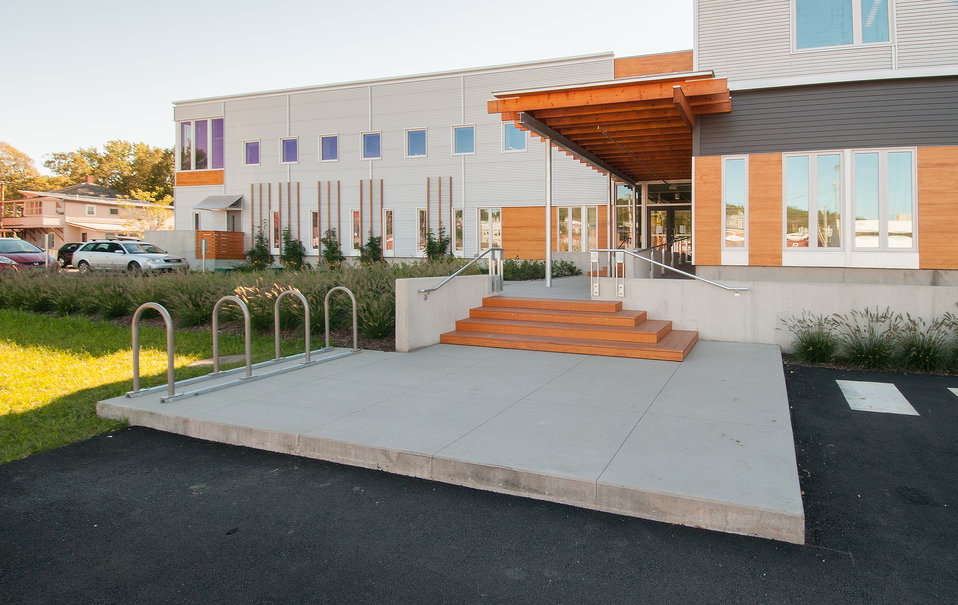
Through the assistance of a U.S. Department of Agriculture (USDA) Rural Development (RD) Community Facilities Grant the Central Vermont Community Action Council whose mission is to create economic security for low to moderate income residents in rural Central Vermont consolidated many of its programs and more than half of its employees into one campus in downtown Barre, VT on Sep. 17, 2013.